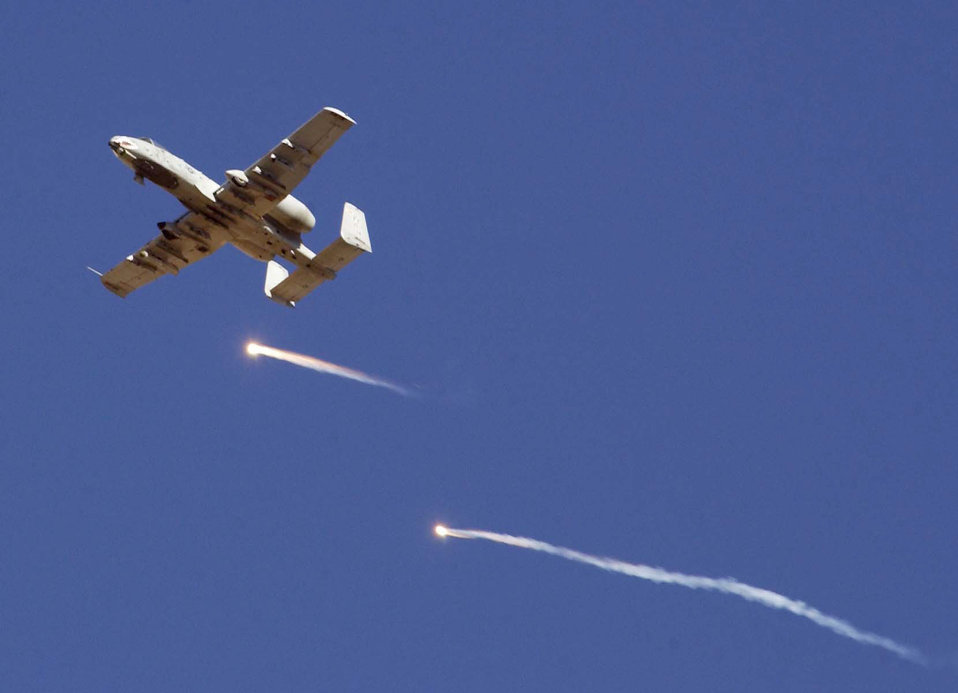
'Cyclone' over Iraq

KIRKUK, Iraq -- A pilot in an A-10 Thunderbolt II drops a flare over here Nov. 17 during Operation Ivy Cyclone. The operation is a combined-arms operation designed to root out and crush insurgents in Iraq. The aircraft is from the 74th Fighter Squadron at Pope Air Force Base, N.C.